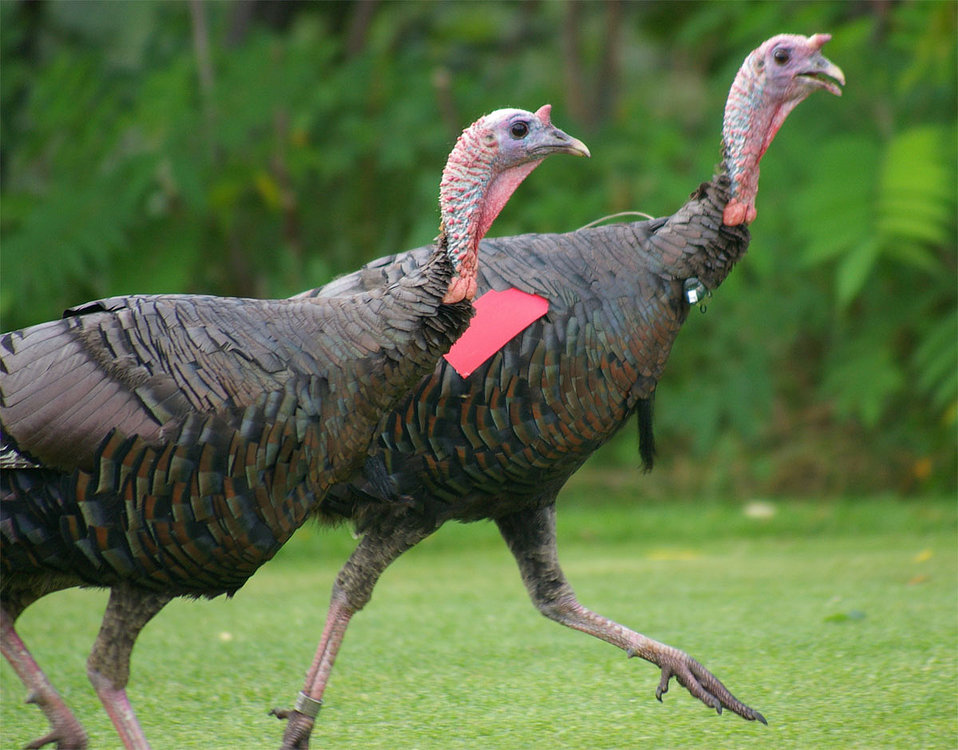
These male turkeys (toms) lived on a golf course near a New Hampshire airport, and were tracked by wildlife biologists to study their habits and movements. The tom on the right wears a tag and transmitter that helps APHIS Wildlife Services biologists monitor his habits and movements.